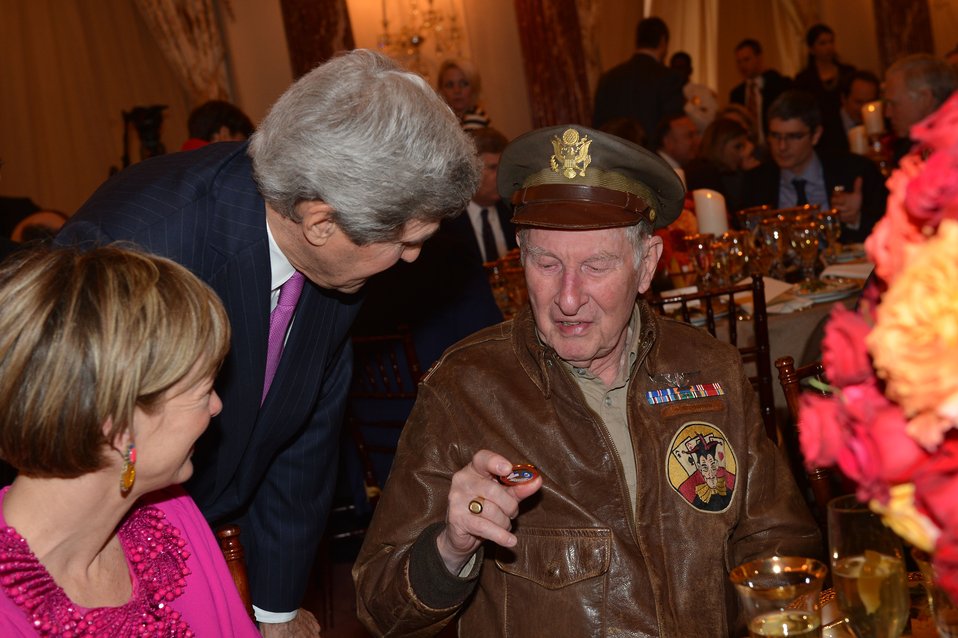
Secretary Kerry and U.S. Army First Lt. Ordel Admire a Service Medal

U.S. Secretary of State John Kerry and First Lieutenant Art Ordel of the U.S. Army admire a service medal. Secretary Kerry honored First Lieutenant Ordel, who flew missions aboard a B-17 over Normandy during World War II, during a State Lunch for French President Francois Hollande at the U.S. Department of State in Washington, D.C., on February 11, 2014.